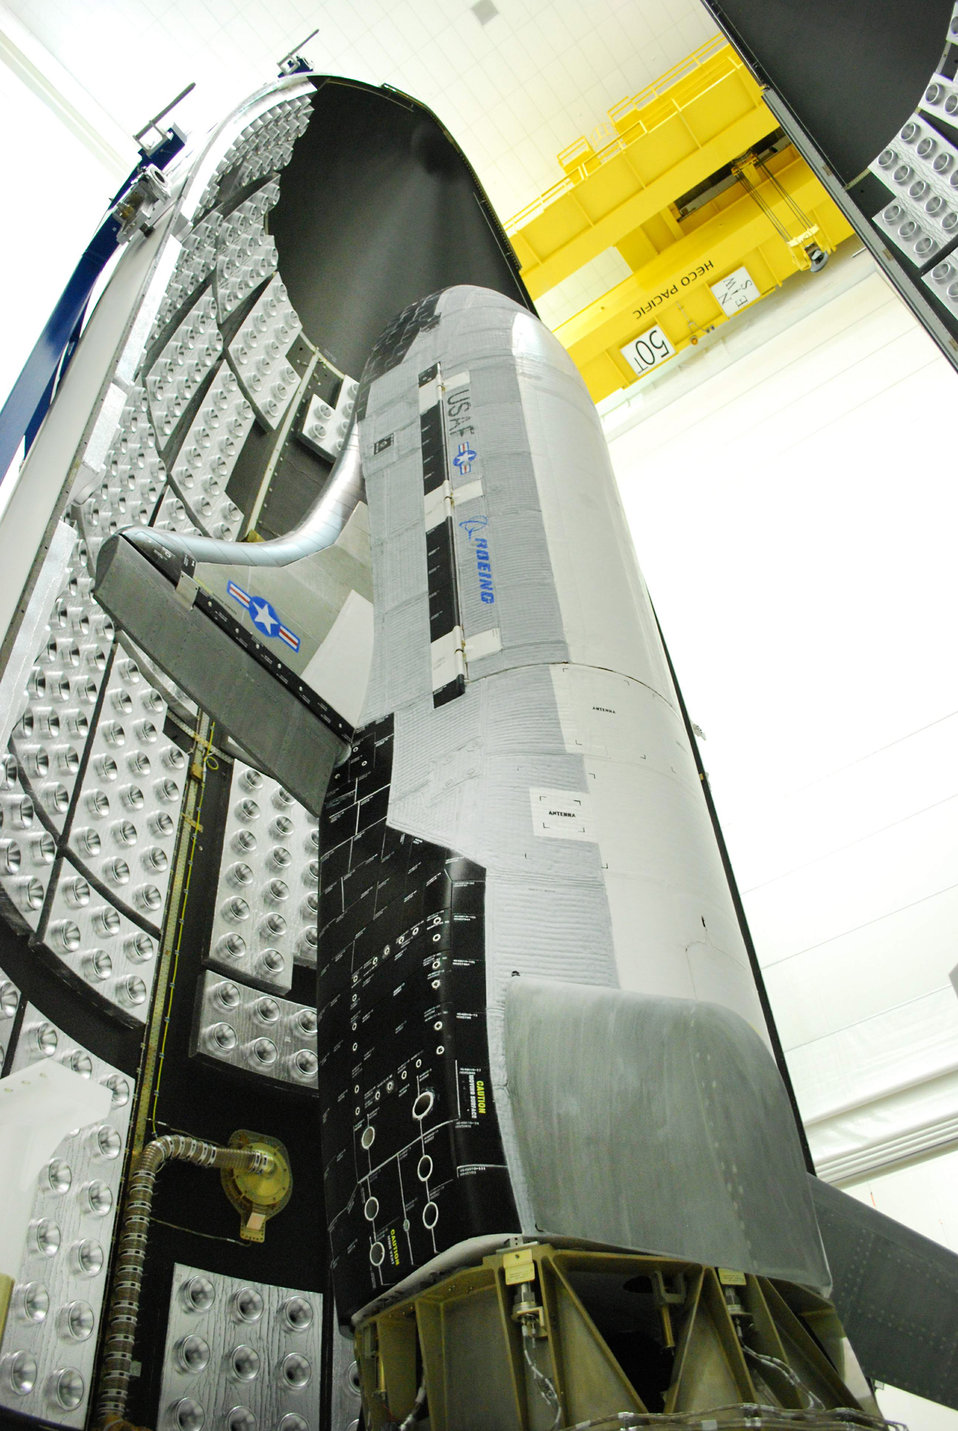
X-37B Orbital Test Vehicle

The US Air Force X-37B Orbital Test Vehicle during encapsulation within the
United Launch Alliance Atlas V 5-meter fairing Feb. 8, 2011, at Astrotech in Titusville, Fla. The fairing protects and carries the OTV into space.